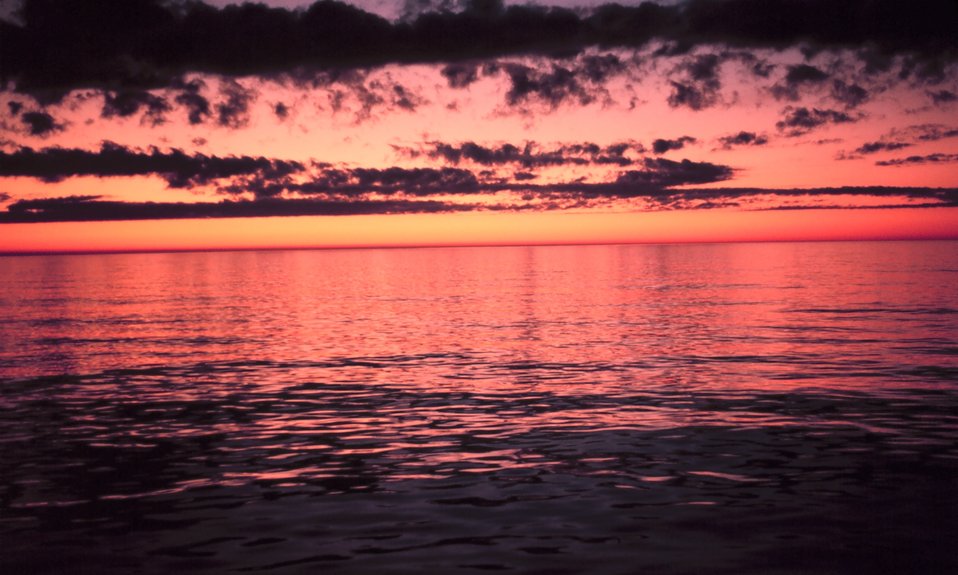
Red sky above reflecting off a red sea below.